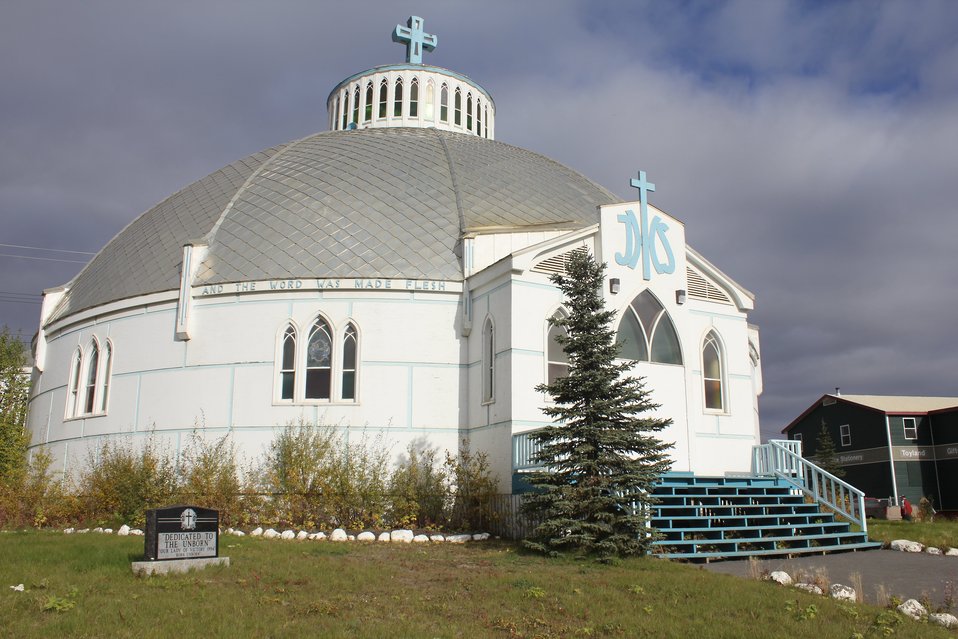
The Catholic Church at Inuvik, known as the 'Igloo Church.'